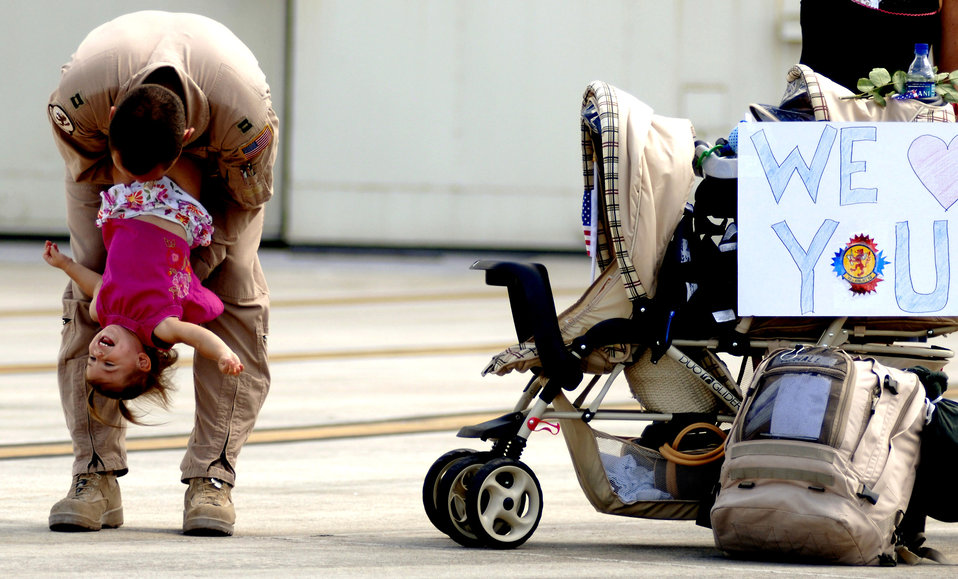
Reunited at last

Capt. Zach Hall is reunited with his daughter, Sophia, Sept. 3 at Charleston Air Force Base, S.C. More than 117 Airmen from the 16th Airlift Squadron returned to Charleston AFB after being deployed to Southwest Asia. Captain Hall is a C-17 Globemaster III pilot.